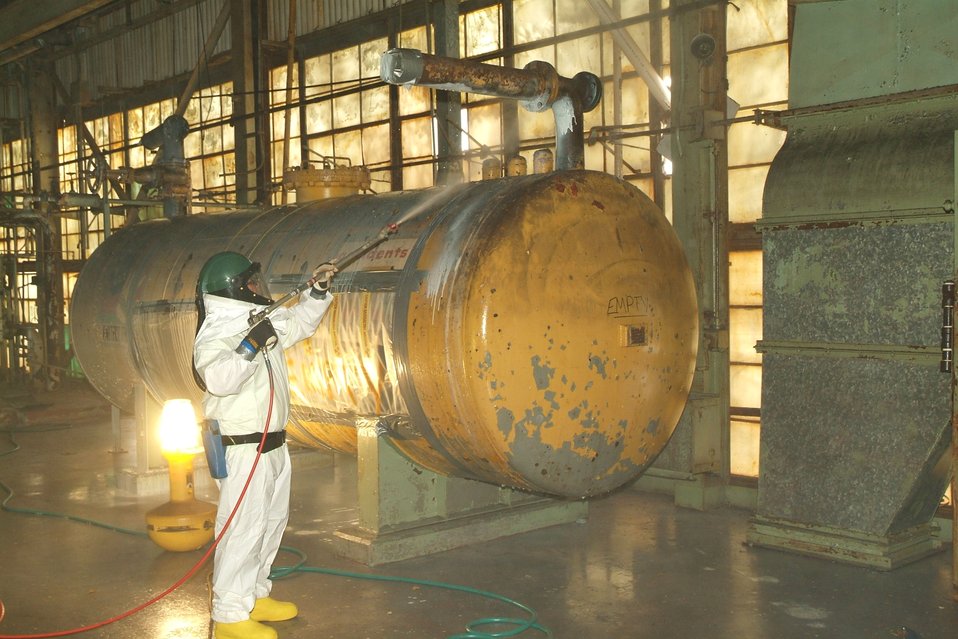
Recovery Workers Save Money, Time in Paducah Site Demolitions

Having saved millions of dollars cleaning up and tearing down an old smelter in September 2010, Recovery Act workers at the Paducah Site are moving on to demolish other closed facilities by September 2011.